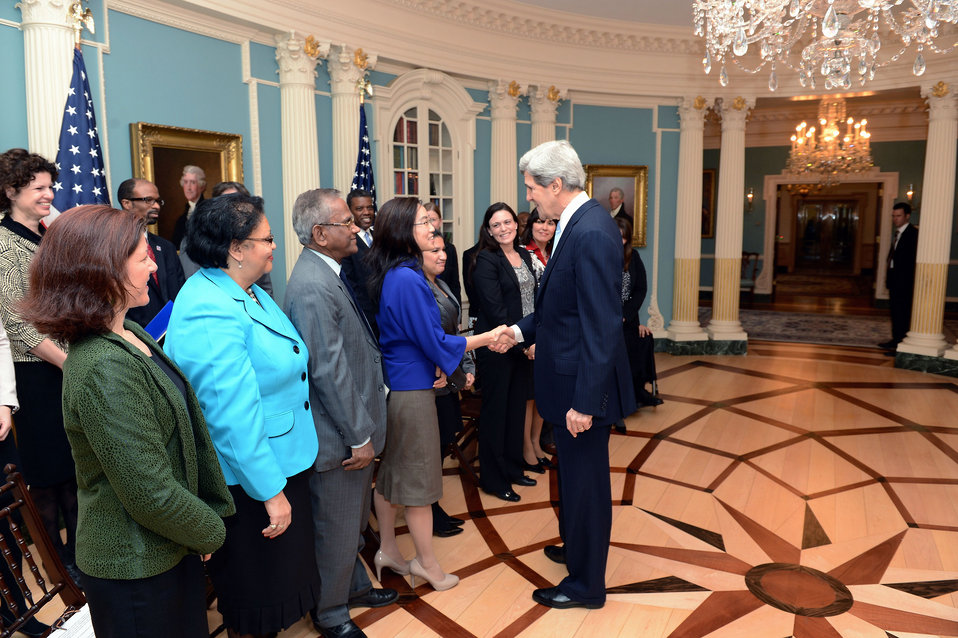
Secretary Kerry Discusses His Commitment to a Diverse Workforce

U.S. Secretary of State John Kerry discusses his commitment to a diverse workforce with State Department employee affinity groups at the U.S. Department of State in Washington, D.C., February 11, 2013.